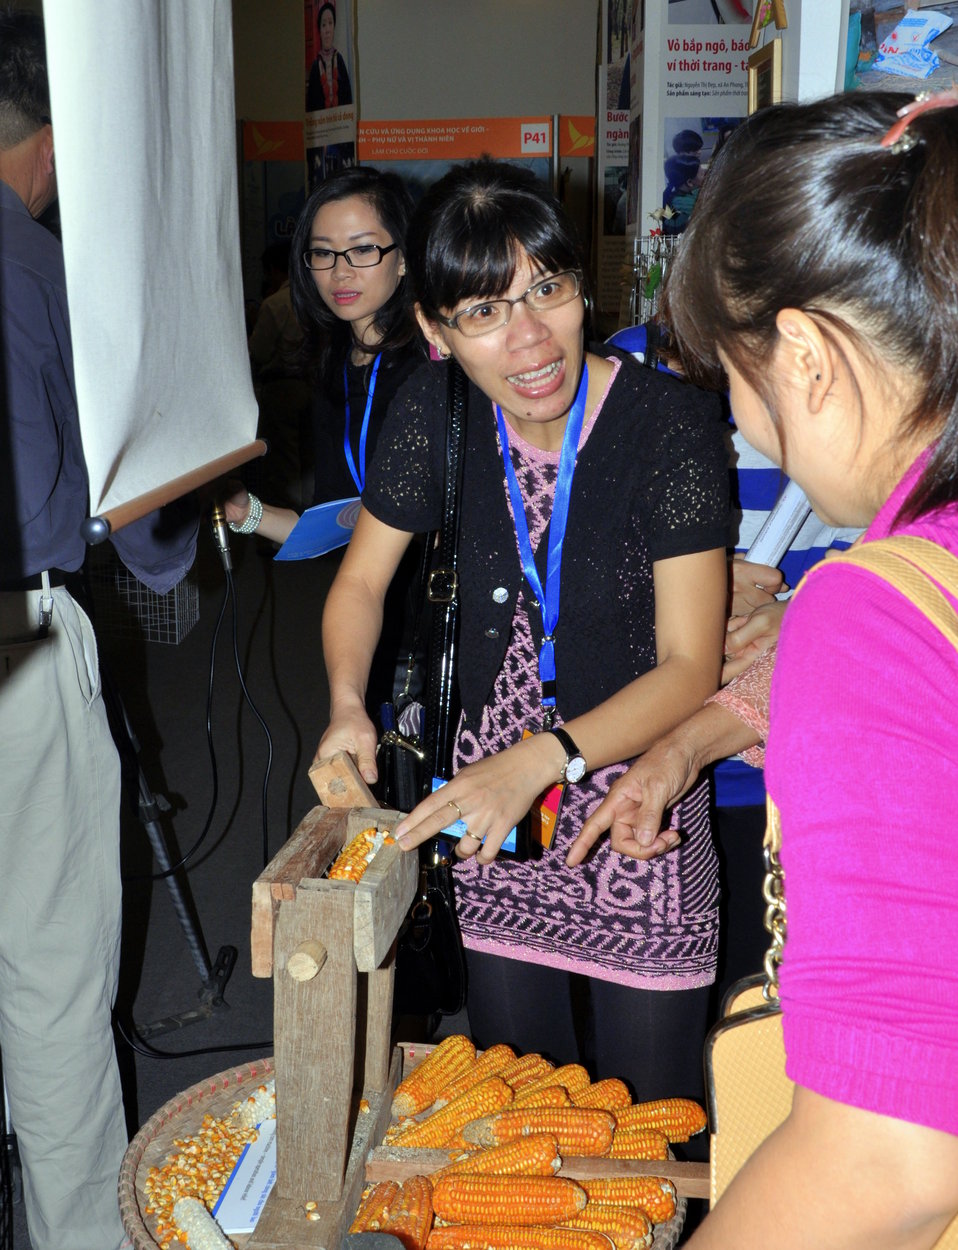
DSCVietnam Women Innovation Day 2013 0117

Hanoi, October 1, 2013.